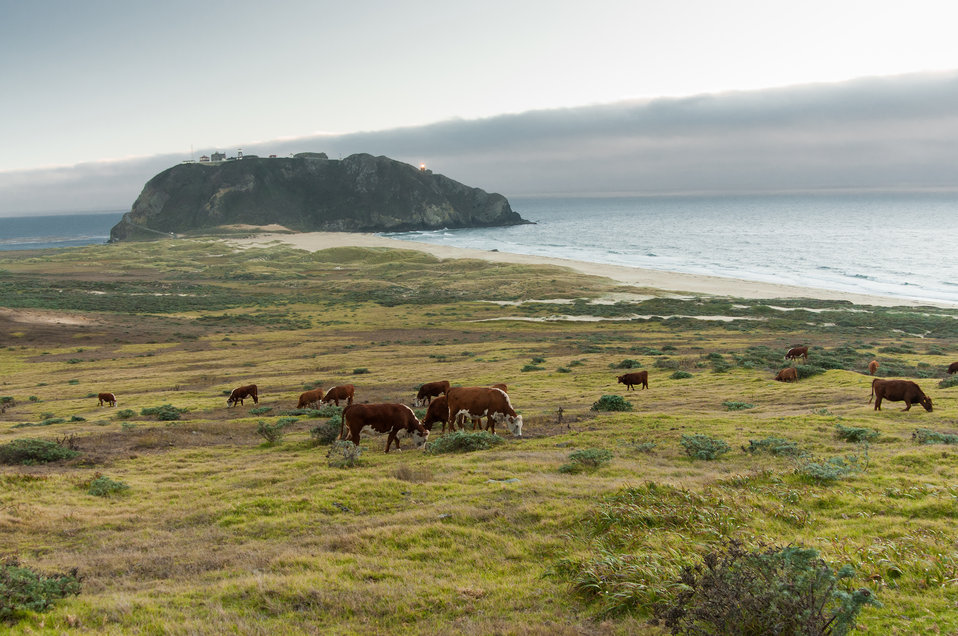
Cattle grazing on the coast of California on Tuesday, August 27, 2013.